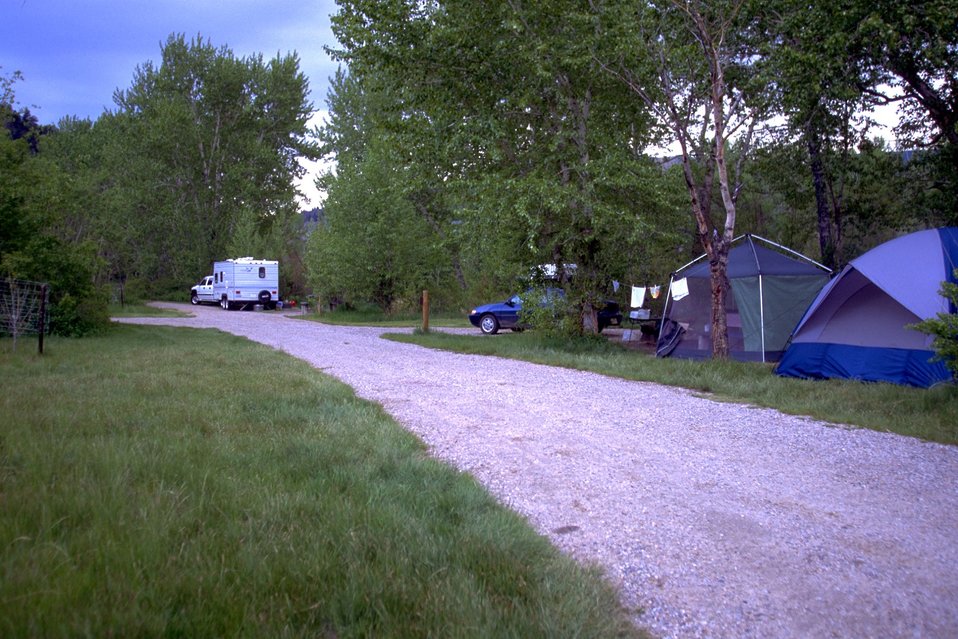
Divide Campground